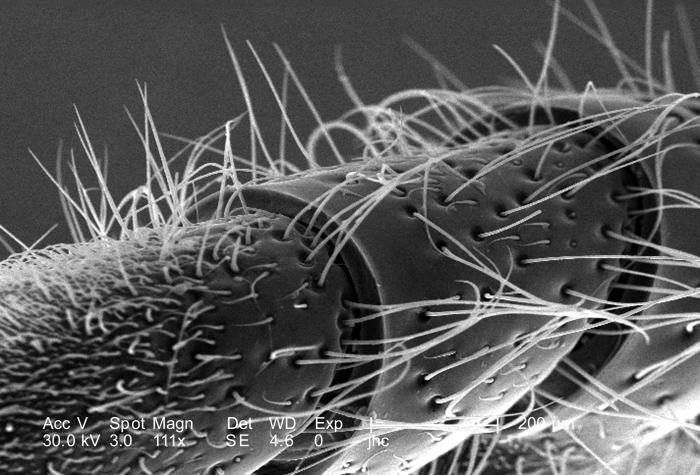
Under a magnification of 111X, this scanning electron micrograph (SEM) depicted some of the exoskeletal morphologic characteristics displayed on the head region of an unidentified beetle found deceased in the suburbs of Decatur, Georgia. In this particular view, the distal segments of the insect's left antenna were highlighted. The antennae are composed of a proximal 'scape', a single 'pedicle', and the distal, multisegmented 'flagellum'.The scape attaches the sensory organ to the head region, and the pedicle joins the distal, jointed, flagellum to the scape. In many species of beetles, depending upon its morphology, the flagellum is further subdivided into a club, composed of the fused apical 'flagellomeres', which is what is displayed here, and the 'funicle', or 'funniculus', composed of the flagellomeres between the club and the scape.